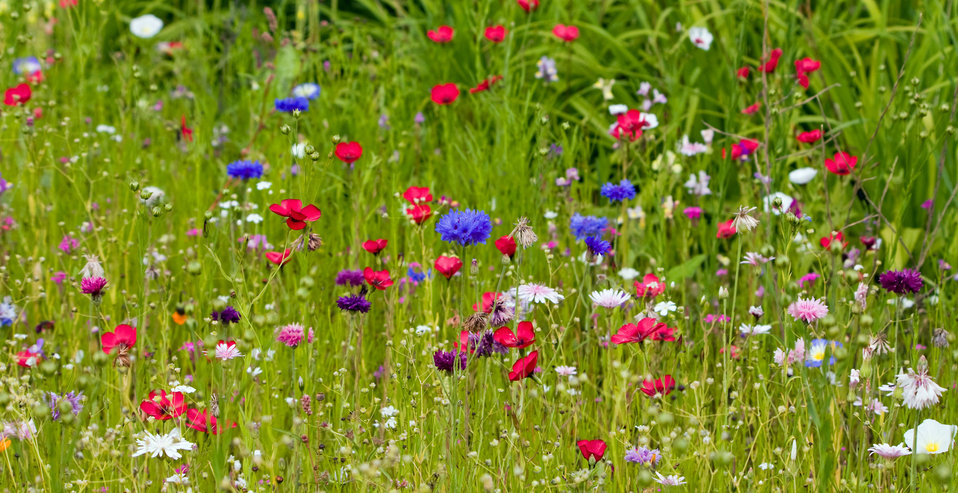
Wild flowers

Background of beautiful colorful wild flowers.